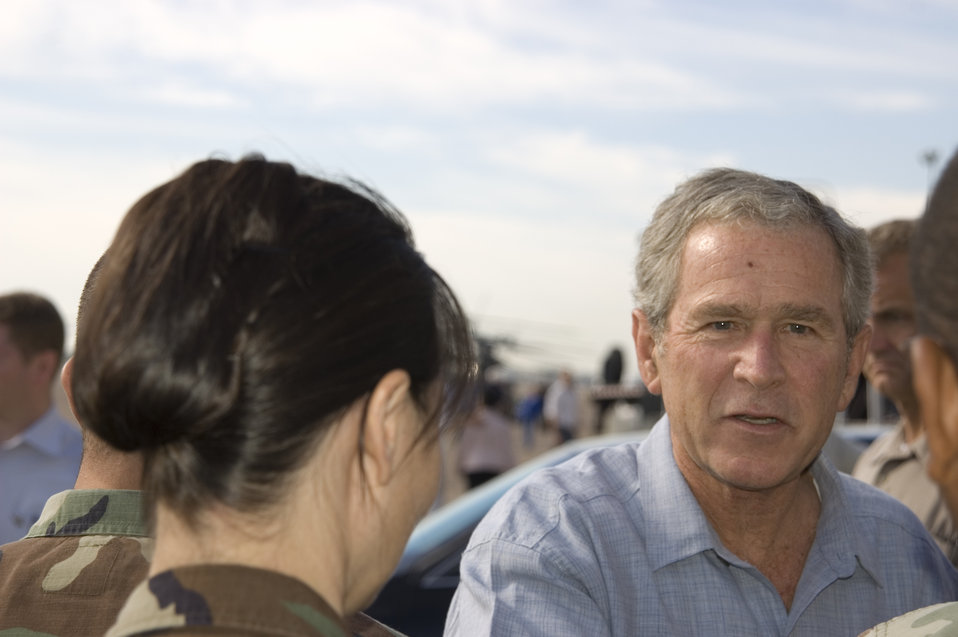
President Bush greets servicemembers supporting Ike relief

President George W. Bush shakes hands with military members Sept. 16 at Ellington Field, Texas, before assessing the damage from Hurricane Ike from the Marine 1 helicopter around the Gulf Coast. Active duty, Reserve and Guard servicemembers are assisting with the relief effort after the storm ravaged the region.